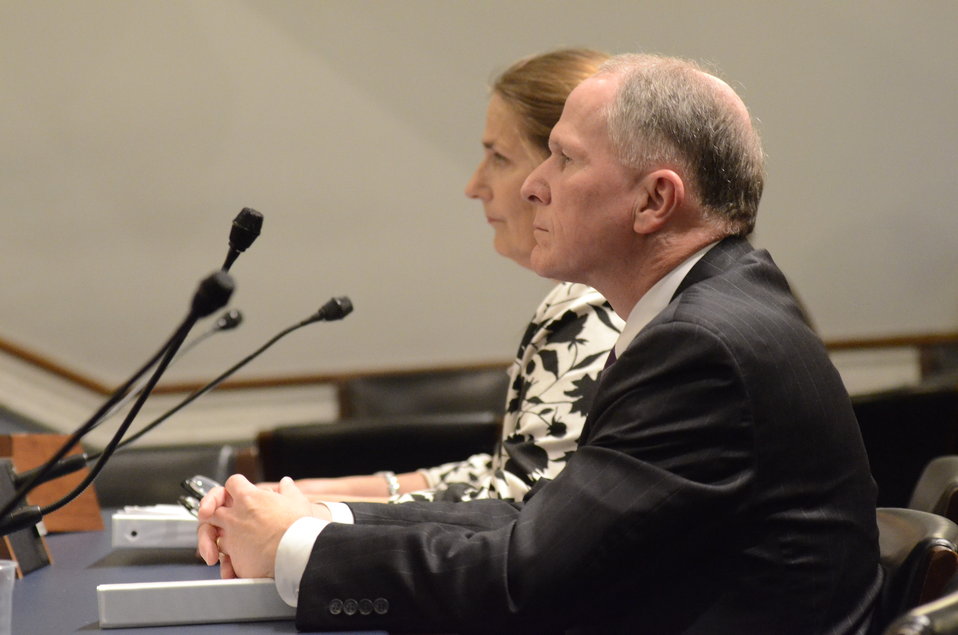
Agriculture Department Animal Plant and Health Inspection Service (APHIS) Associate Administrator Dr. Kevin Shea speaking on Retailers & Entertainers Lacey Implementation & Enforcement Fairness Act & Freedom from Over-Criminalization & Unjust Seizures Act at the Longworth House Office Building in Washington, D.C. on Tuesday, May 8, 2012.